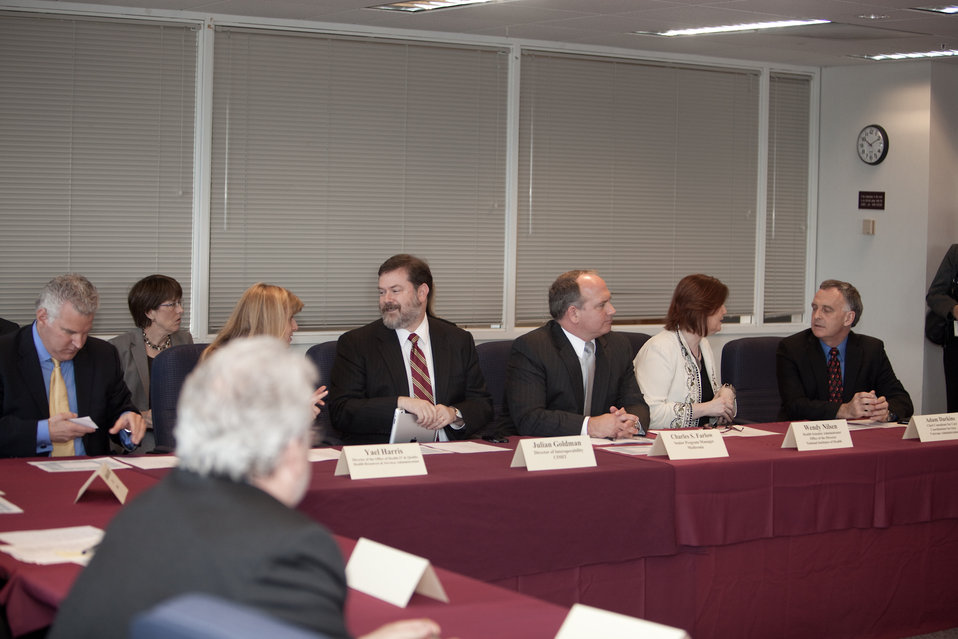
mHealth Attendees at FCC's Headquarters

Members from the health industry attendees David Hankin of Alfred Mann, Yael Harris (Director of the Office of Health IT & Quality) of HRSA, Julian Goldman (Director of Interoperability) of CIMIT, Charles Farlow (Senior Program Manager) of Medtronic, Wendy Nilsen (Health Scientist Administrator, Office of the Director) of NIH and Adam Darkins (Chief Consultant for Care Coordination Services) of U.S Dept. of VA waiting for FCC's Chairman to speak.

June 6, 2012 - FCC Headquaters | Washington, DC